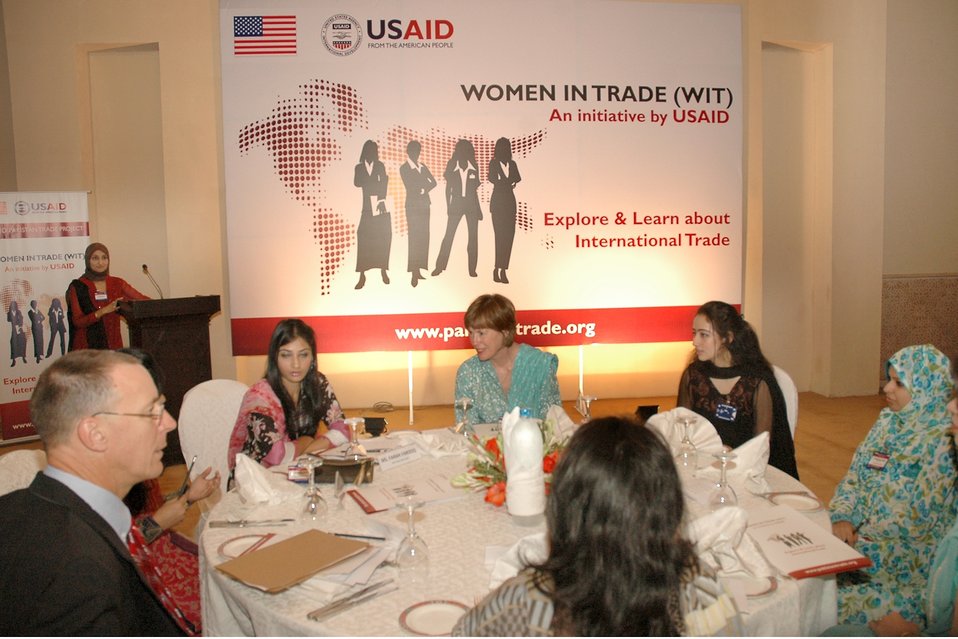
Launch of USAID's Women in Trade Initiative

The international trade sector in Pakistan currently employs very few women in managerial positions. A recent USAID-funded study has shown women comprise less than 10 percent of management and 20 percent of junior staff in trade companies. The Women in Trade initiative will work to set up linkages between international firms and local universities, so that more women have opportunities to explore careers in international trade. The USAID-funded initiative will also help companies select the best-suited male and female university graduates for training and potential future recruitment.